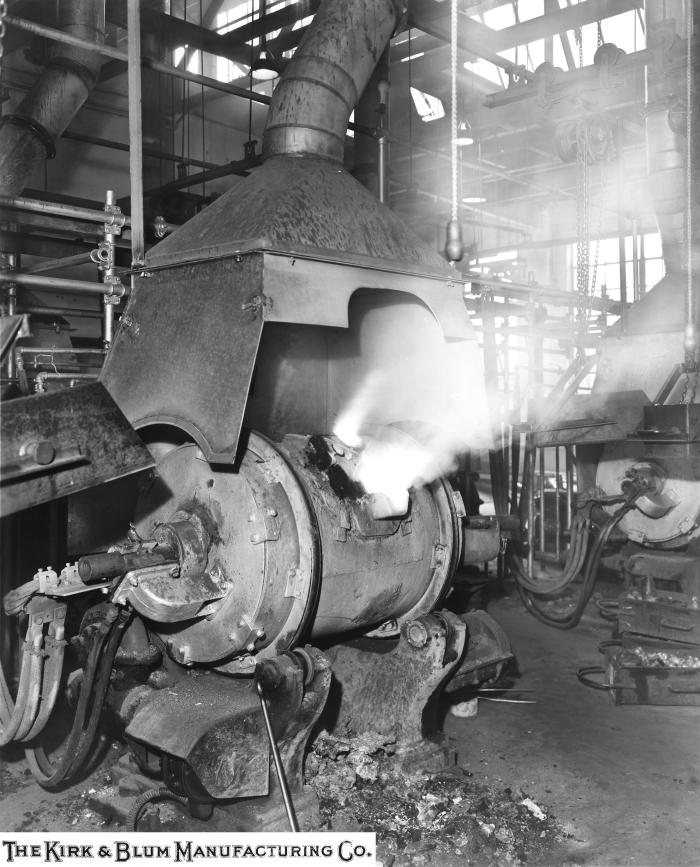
This historical photograph, provided by the Center for Disease Control's (CDC), National Institute for Occupational Safety and Health (NIOSH), depicted an overhead Kirk & Blum Co. exhaust ventilation hood, in the 'Off' position, inside the Cincinnati, OH, William Powell Valve Co. factory. Note the pressurized gasses being expelled from the chamber beneath the hood, which would have normally been ingested by the exhaust system, had the hood been turned 'On'. It was not known from this image whether or not these gasses were toxic, or noxious. See PHIL #9642 for another view of this scenario, however, in that view, the vent is ingesting the expelled fumes.